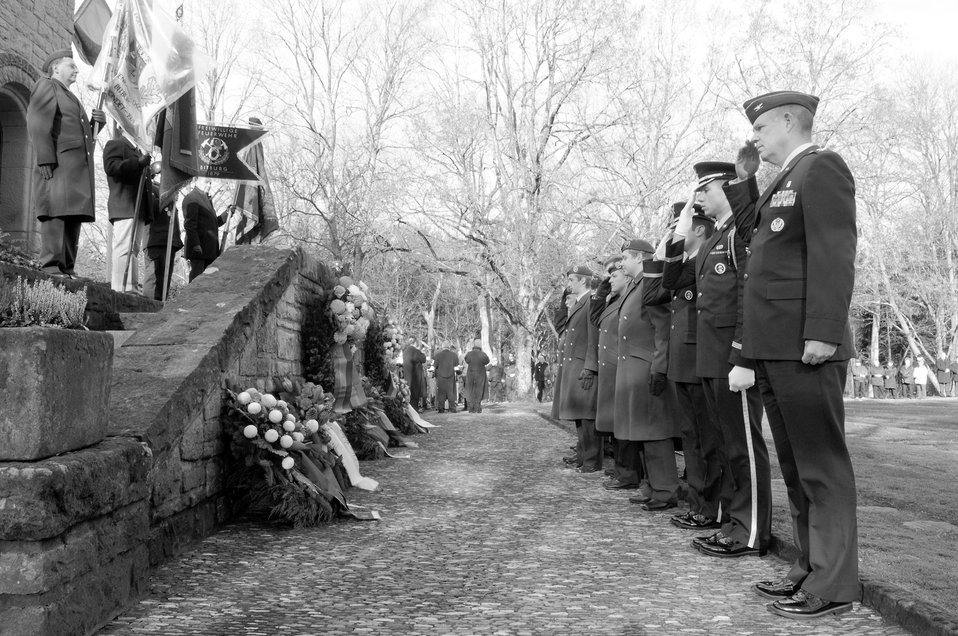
National Day of Mourning

German and U.S. servicemembers pay their respects during the German National Day of Mourning ceremony Nov. 11, 2010, at Bitburg, Germany. German and American military representatives as well as firefighters, police and government officials from the local area participated in the ceremony to remember victims of war and tyranny.